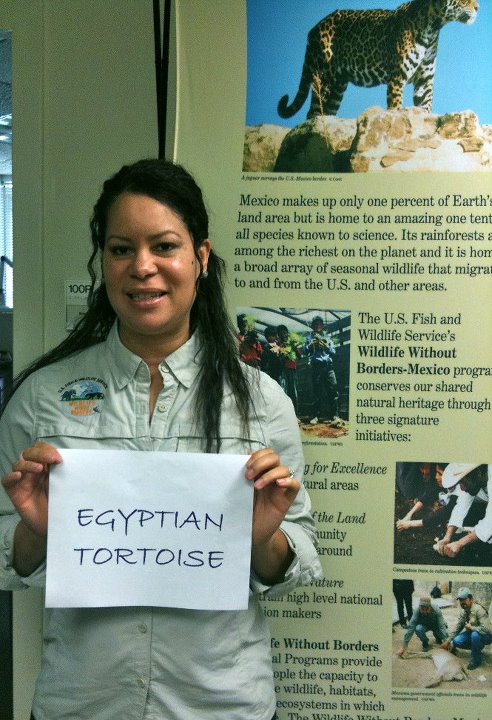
Valencia Richardson, 'Egyptian Tortoise,'

International Affairs participates in FFI's In Our Hands campaign